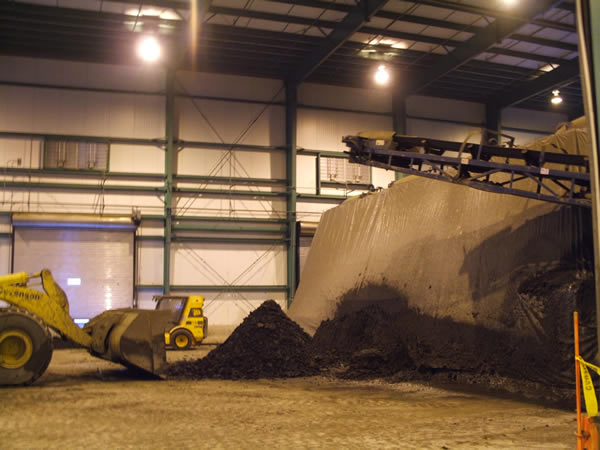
December 2009, Cleaning up the contamination loading area inside the de-watering facility